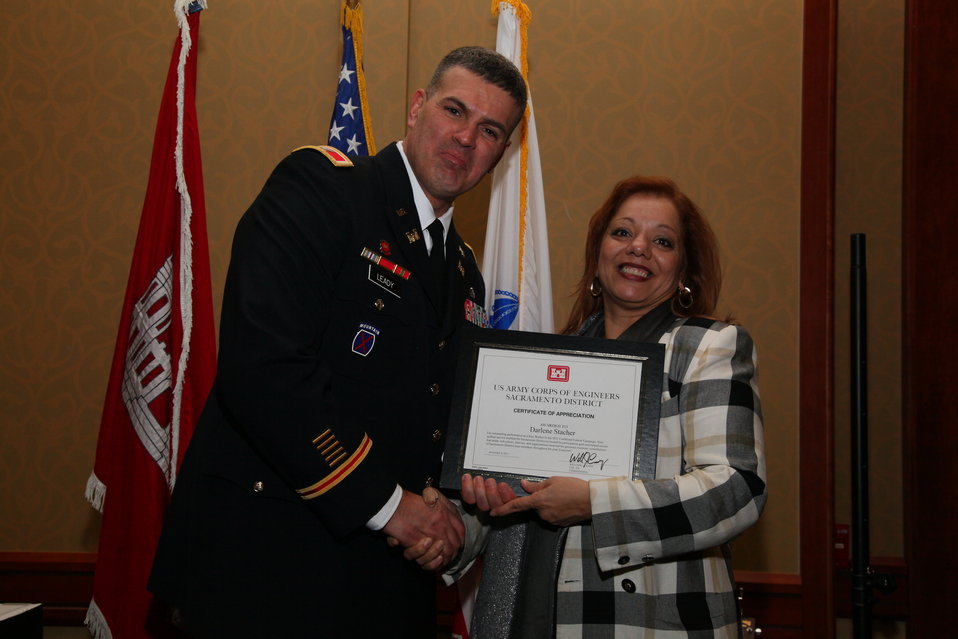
Sacramento District Holiday Party 2011